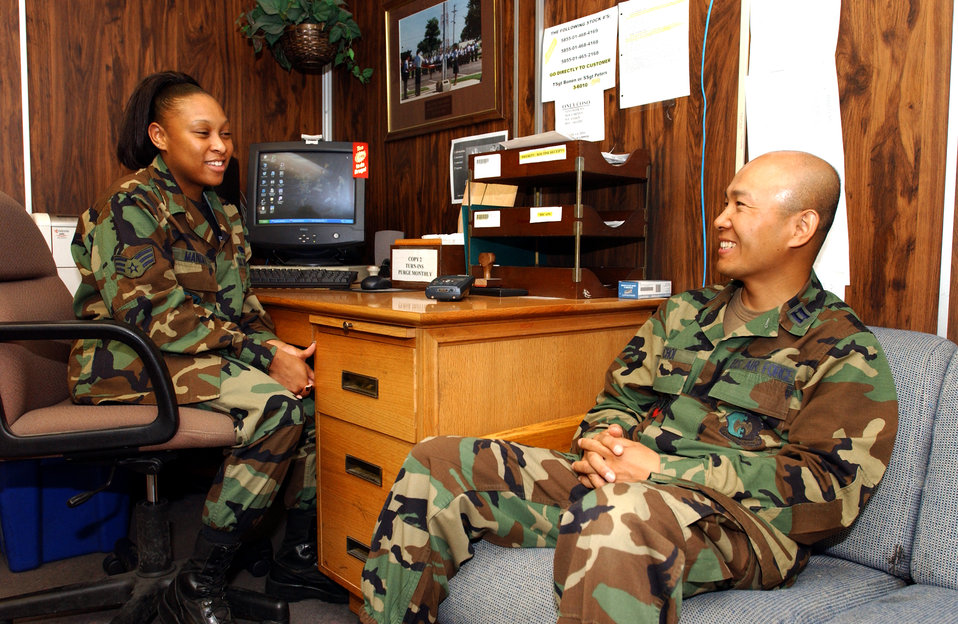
Liberty, freedom: An Airman's journey

MINOT AIR FORCE BASE, N.D. -- Chaplain (Capt.) Jin Choi (right) talks with Senior Airman LeJanena Manzay here. Chaplain Choi grew up in South Korea and immigrated to the United States with his parents at age 19. Chaplain Choi is a 5th Bomb Wing chaplain, and Airman Manzay is a 5th Logistics Readiness Squadron supply apprentice.